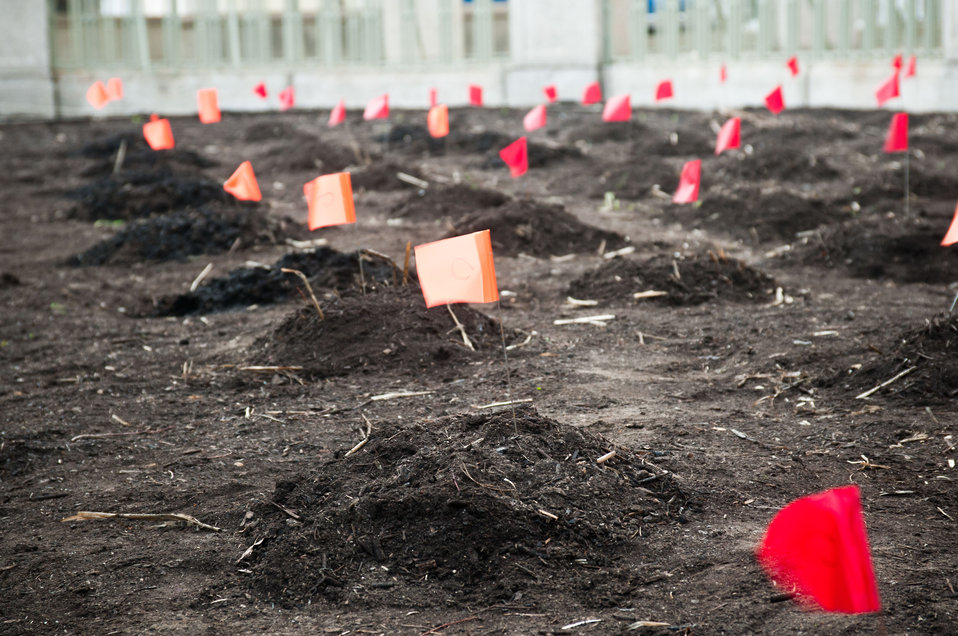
Flags mark freshly planted ground by more than 30 Students from Eastern and Western Tribes, Southeast Alaska, and Tuba City, Arizona came to the Nation’s Capitol to plant vegetable seeds that are indigenous to North America. The garden is called The Roots of American Agriculture, and is part of the Headquarters’ People’s Garden, at the U.S. Department of Agriculture in Washington, DC on Wednesday, April 21, 2011.